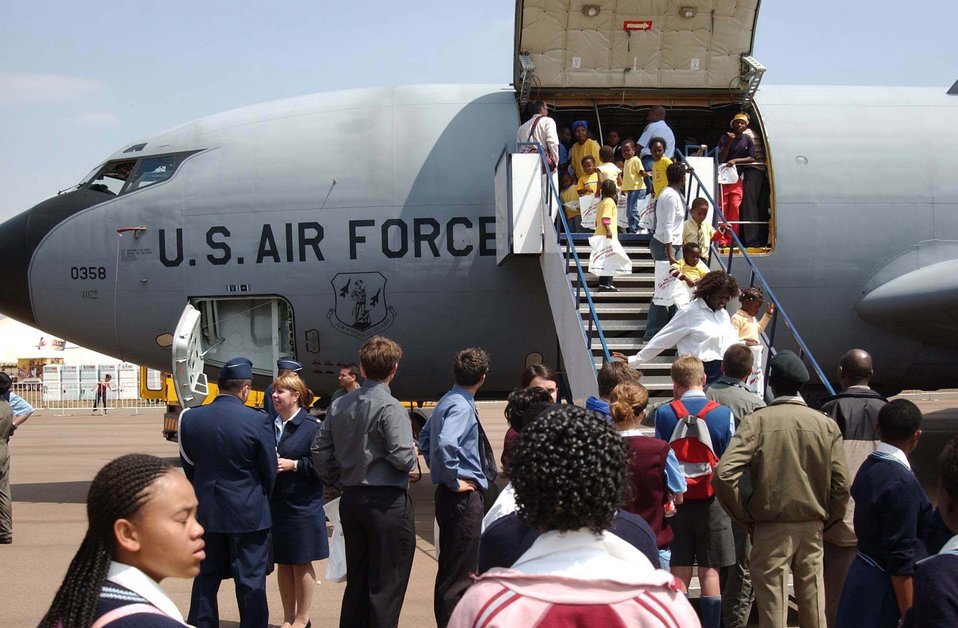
U.S. military supports South African trade show

WATERKLOOF AIR FORCE BASE, South Africa -- Crowds attending the South Africa Aerospace Exhibition view a KC-135 Stratotanker deployed from the New York Air National Guard's 107th Air Refueling Wing. The Guard has C-5 Galaxy, F-16 Fighting Falcon, HH-60G Pave Hawk and KC-135 aircraft on display here.